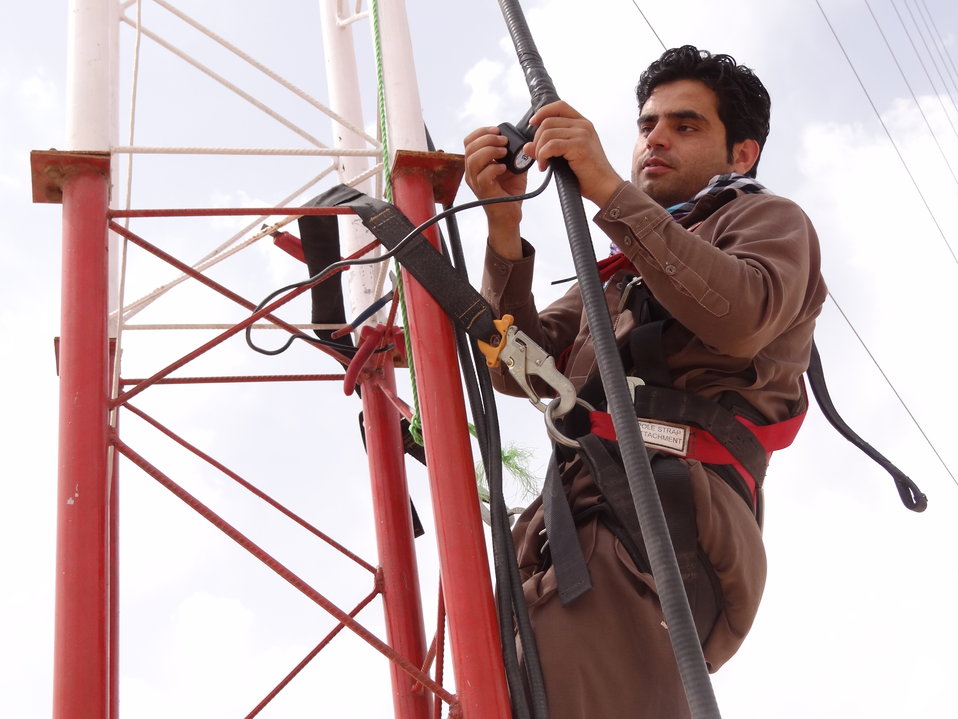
Media

The increasing popularity of television is providing a critical source of news and entertainment across Afghanistan. USAID’s media development initiatives support the construction and upgrade of provincial TV stations to improve broadcast quality and expand TV access to underserved and remote communities. USAID has supported more than 50 community radio stations and trained nearly 11,500 journalists.